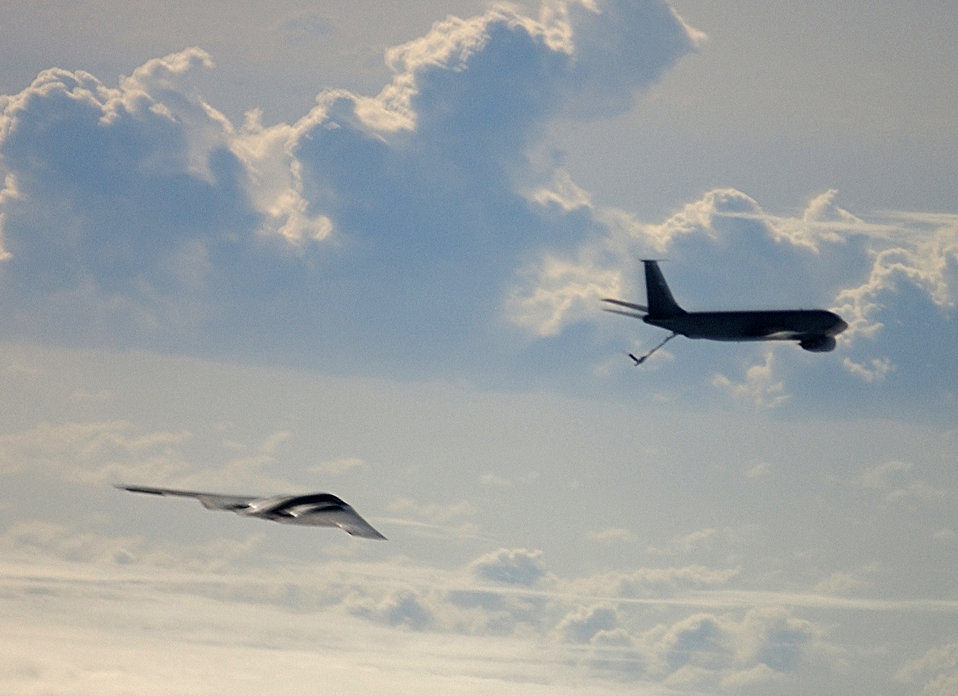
Shock and Awe

OPERATION IRAQI FREEDOM -- A KC-135 Stratotanker from the 28th Expeditionary Air Refueling Squadron prepares to refuel a B-2 Spirit bomber during A-day. The first deployed B-2 bombers took part in the